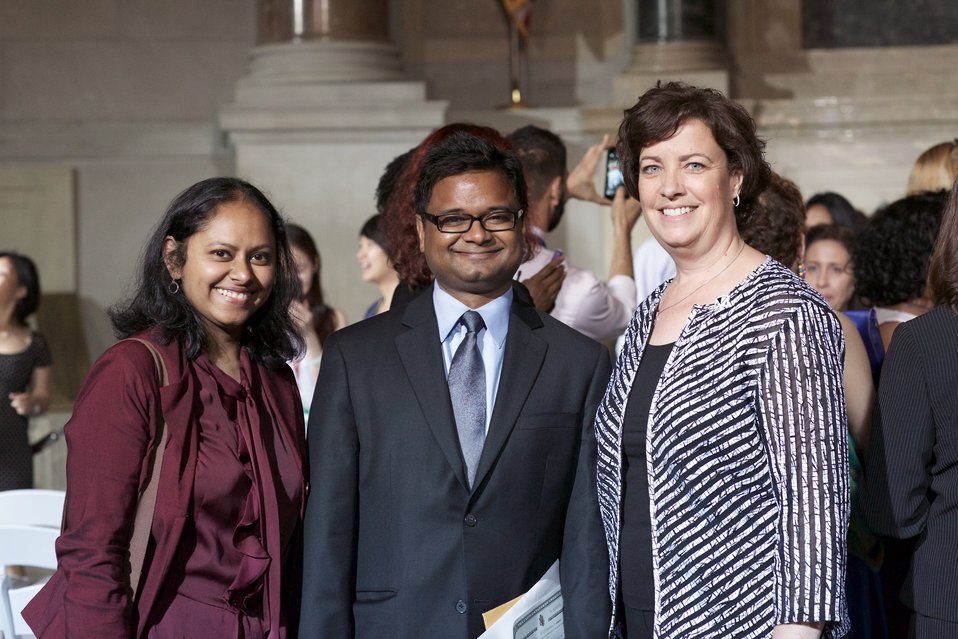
Naturalization Ceremony with Michelle Obama